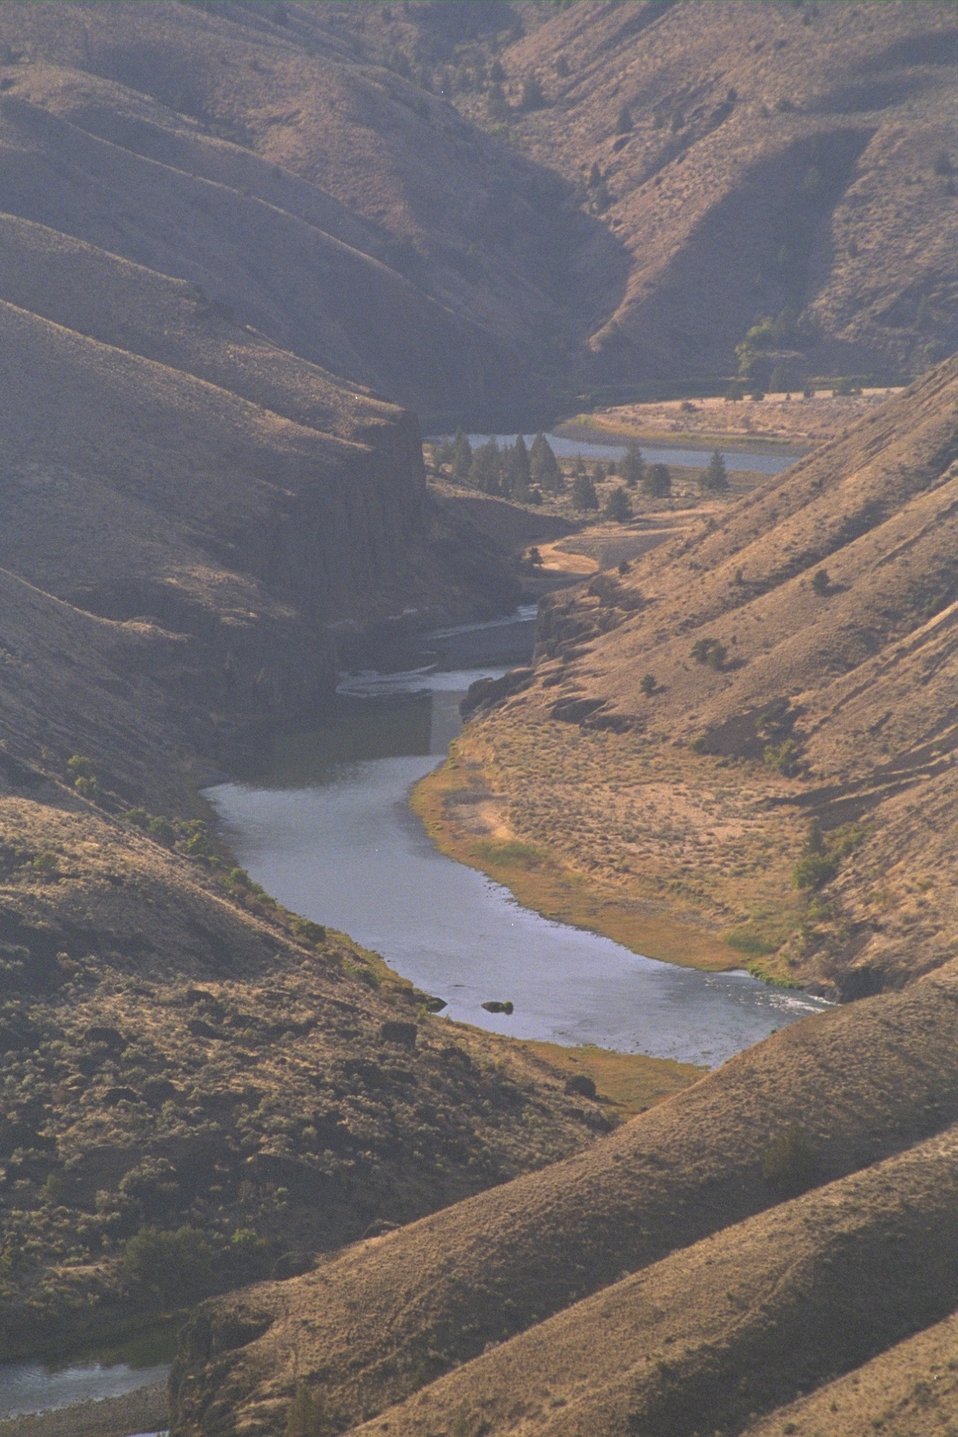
Looking up the John Day River from a viewpoint above.